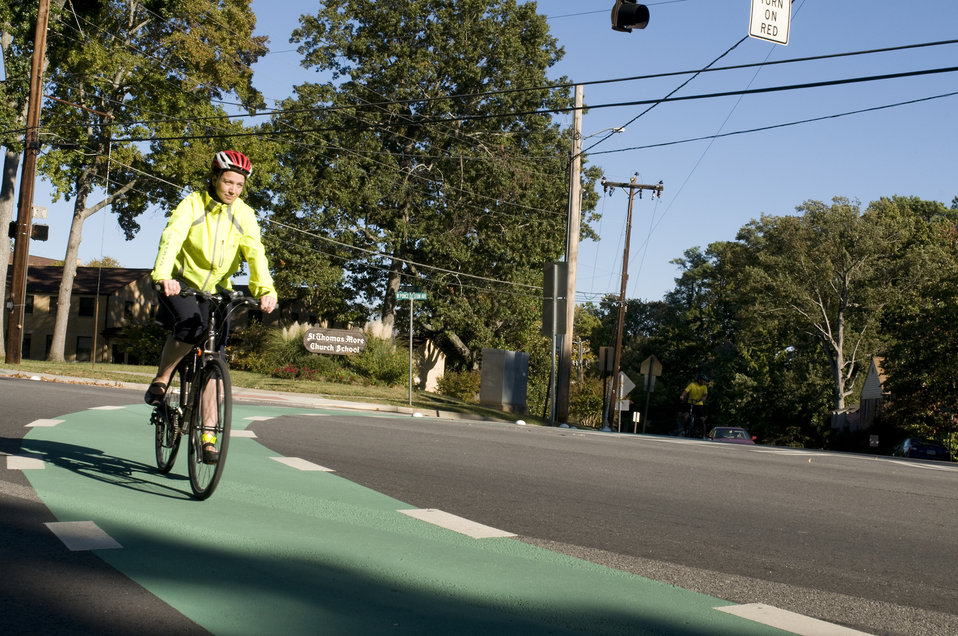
Photographed on a sunny Georgia day this female bicyclist had embarked on a morning bicycle ride. Note the brightly-colored windbreaker she was wearing, which would help drivers see her more easily, as well as the protective, aerodynamic helmet, and the snug leggings, all adding to an overall safer bike ride. Also important, is that she was riding in the designated bicycle traffic lane, and abiding by the proper rules of the road, which govern drivers of both bicycles, and motorized vehicles.